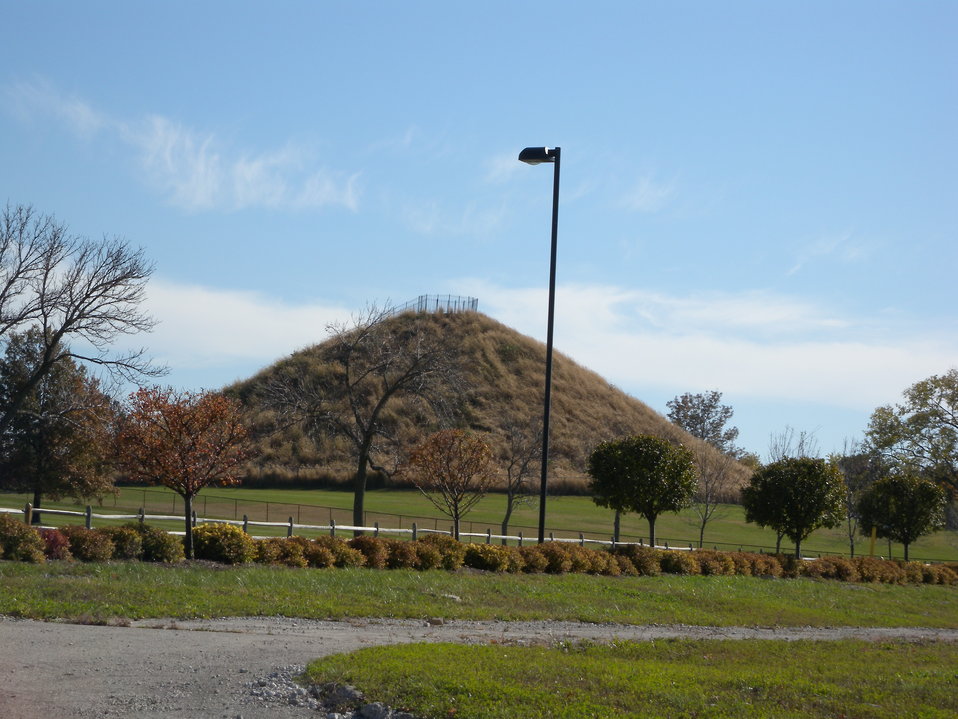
Mound closure

With a closure ceremony planned for Oct. 4, the remainder of the Mound Site will be turned over to the Miamisburg Mound Community Improvement Corporation (MMCIC), a community reuse organization. Meanwhile, the DOE Office of Legacy Management will conduct long-term surveillance of the site.